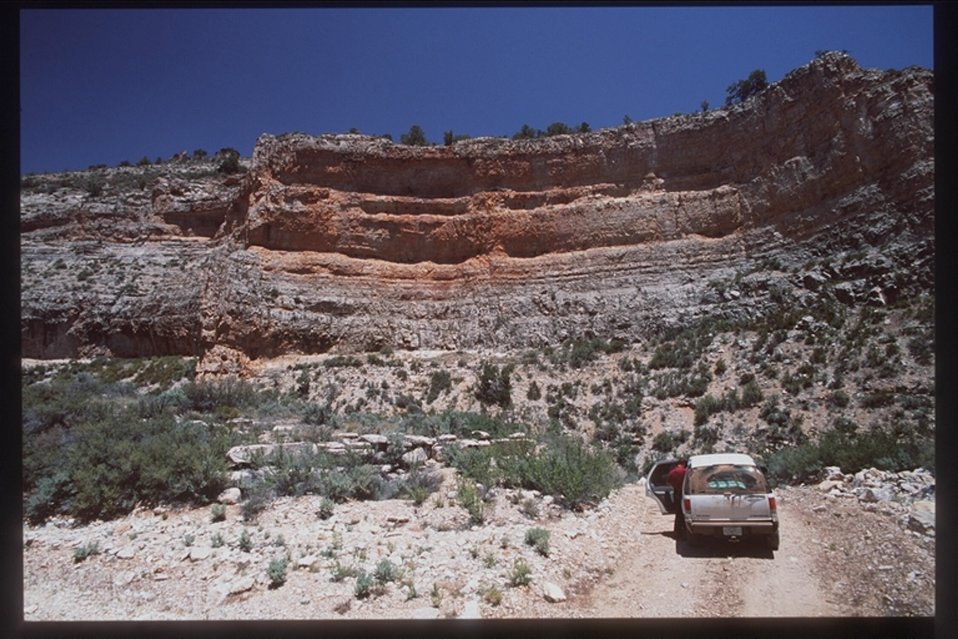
The Grand Canyon-Parashant National Monument was designated to protect the North Rim area of the Grand Canyon.